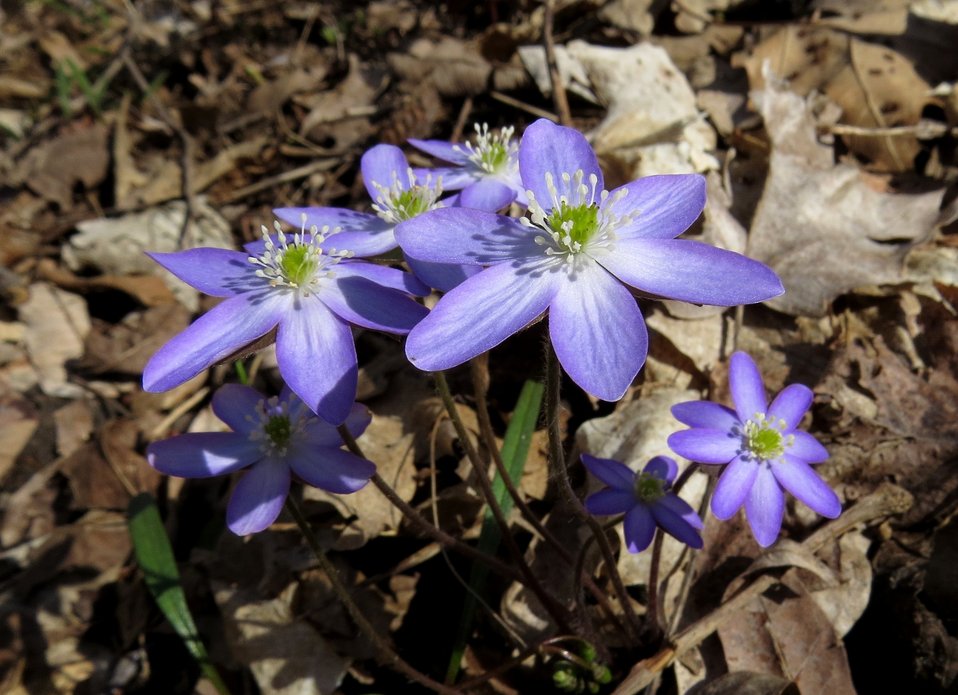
Sharped-Lobed Hepatica